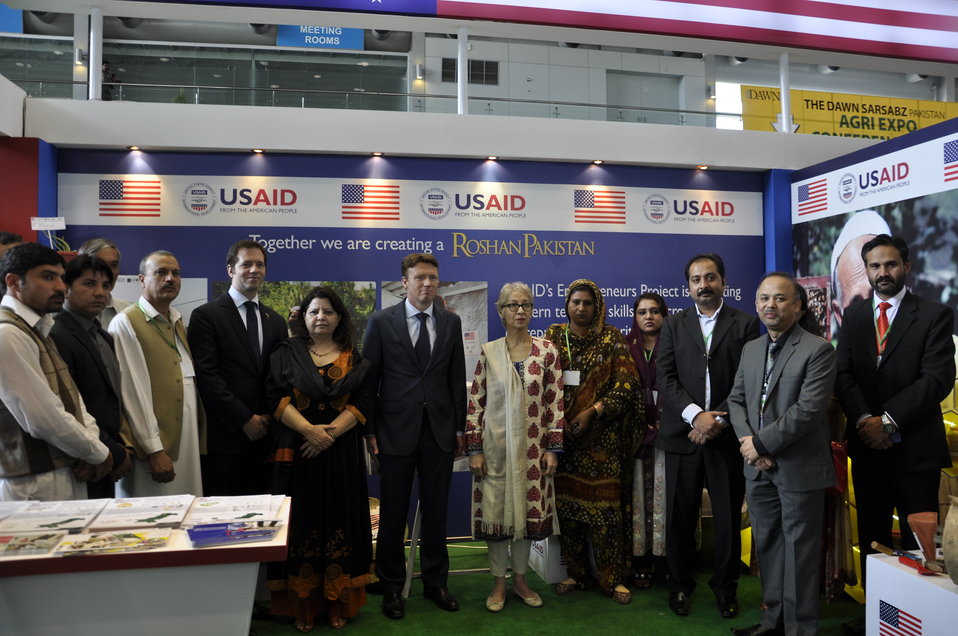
Ambassador of The Netherlands, Mr. Marcel de Vink with the team of USAID's Entrepreneurs Project at Dawn Sarsabz Pakistan Agri Expo.